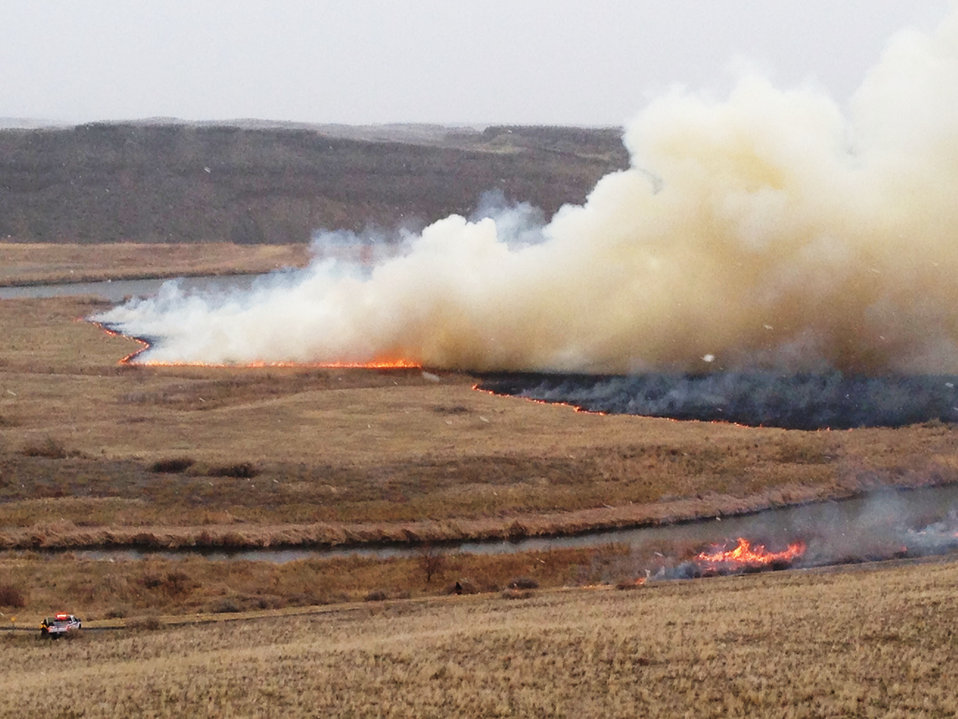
Prescribed Fire at Columbia NWR

Last week, Mid-Columbia River National Wildlife Refuge Complex Fire staff conducted a 52-acre prescribed burn on Columbia National Wildlife Refuge (NWR). The Columbia NWR is situated within the Columbia Basin of central Washington. Approximately 30,000 acres, scattered across four counties, comprise the Refuge land. Established in conjunction with the Columbia Basin Irrigation Project in 1944, most of the Refuge is within the Drumheller Channels National Natural Landmark. Surrounded by irrigated croplands, this area is characterized by a tapestry of cliffs, coulees, lakes, wetlands and shrub-steppe.